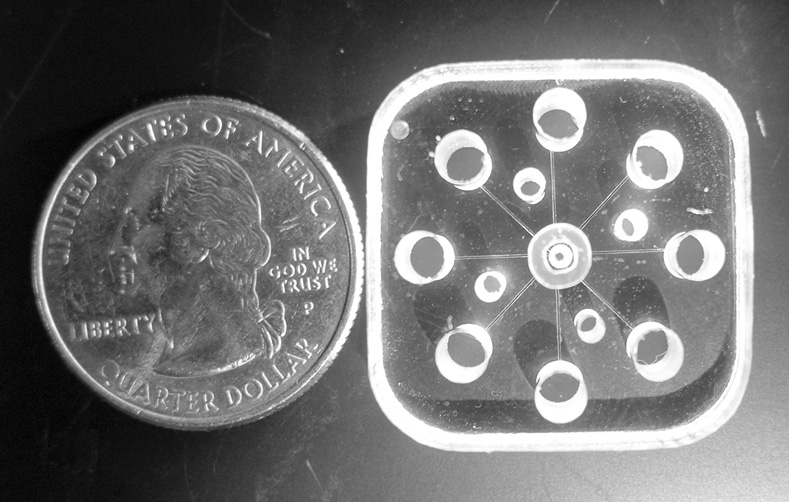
Lab-On-A-Chip; GEMBE

Core of the new NIST miniature GEMBE chemical separation device is a machined acrylic block, shown with a quarter for scale. Eight sample resevoirs for multiplexed separations form a ring around the central buffer solution port. (Smaller holes are for assembly screws.)